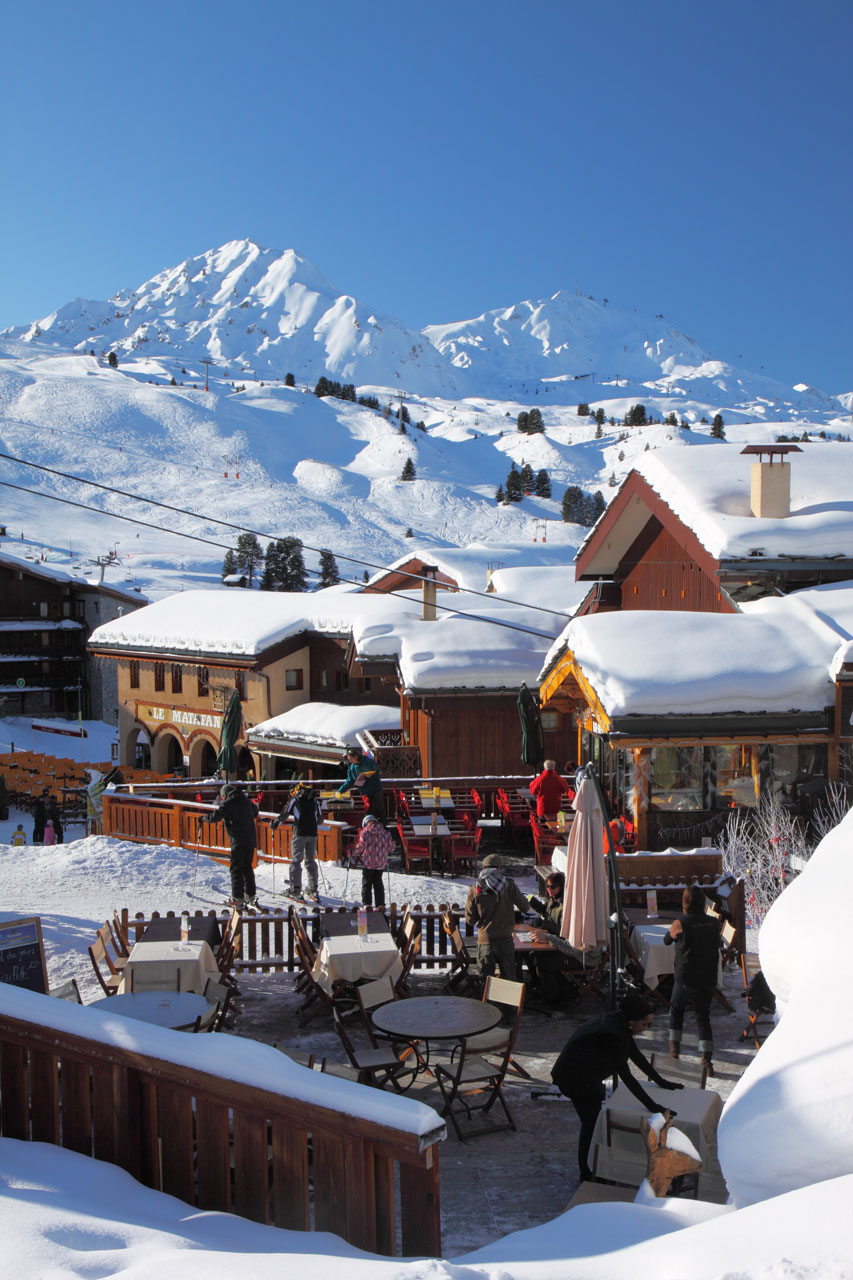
Winter ski resort

La plagne ski resort with alps in the background.